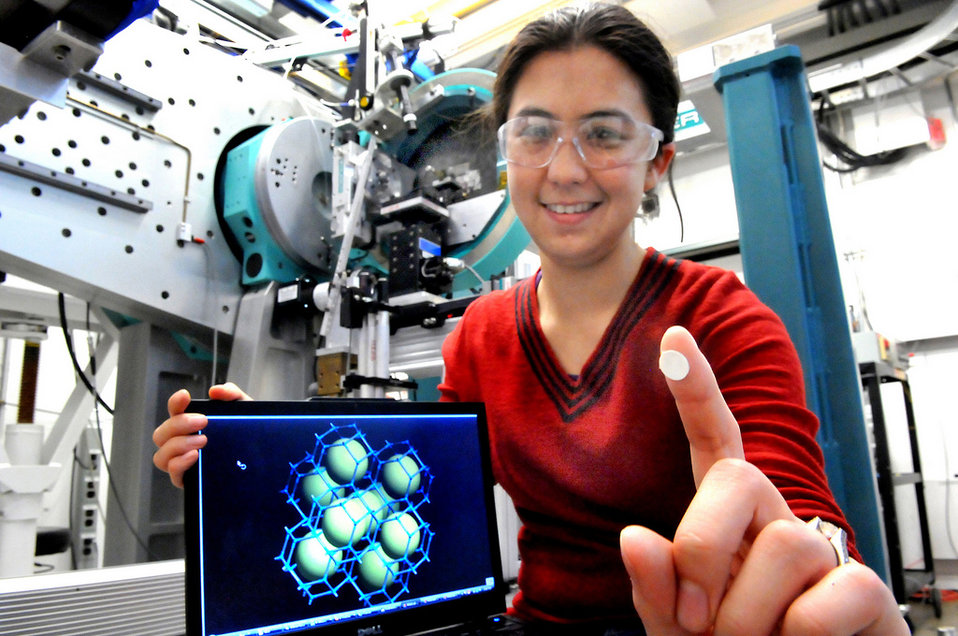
Argonne National Laboratory scientist holds up a water of metal organic framework ZIF-8 with its structure display on the computer screen.

Scientists discovered a new route to transform the structure of porous materials at industrially accessible high pressures. The method could be used to optimize a materials performance for applications in crucial areas such as hydrogen storage for fuel cells.